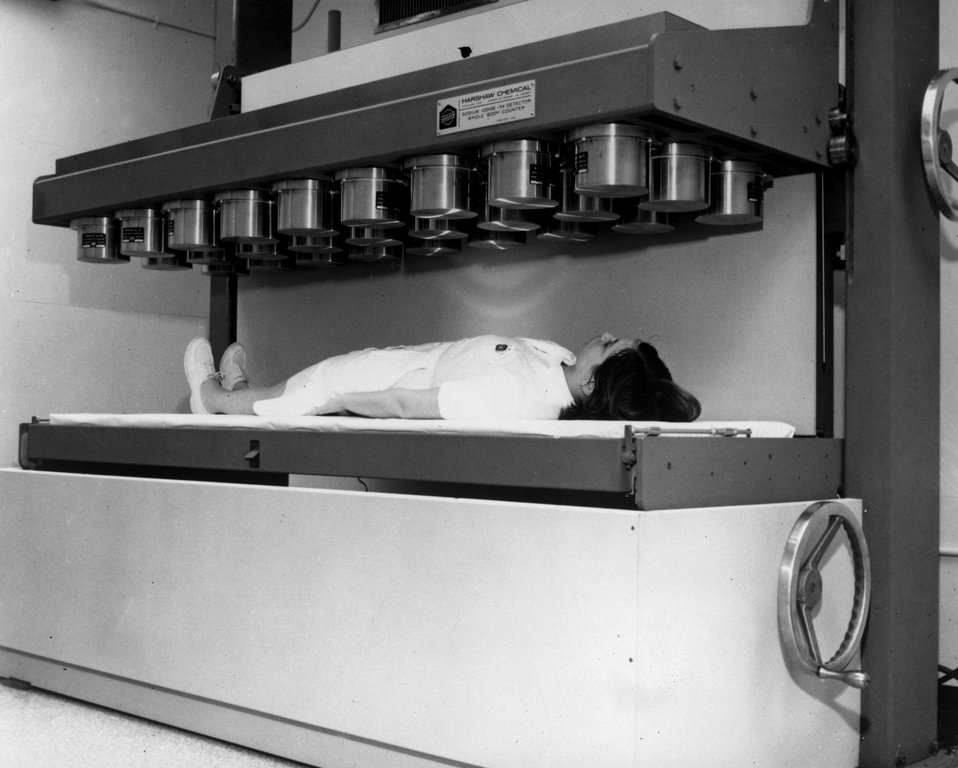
Low Level Whole Body Counting Facility, a nurse simulates a patient in the multi-crystal whole body counting and gamma ray scanning spectrometer system.
c.1968